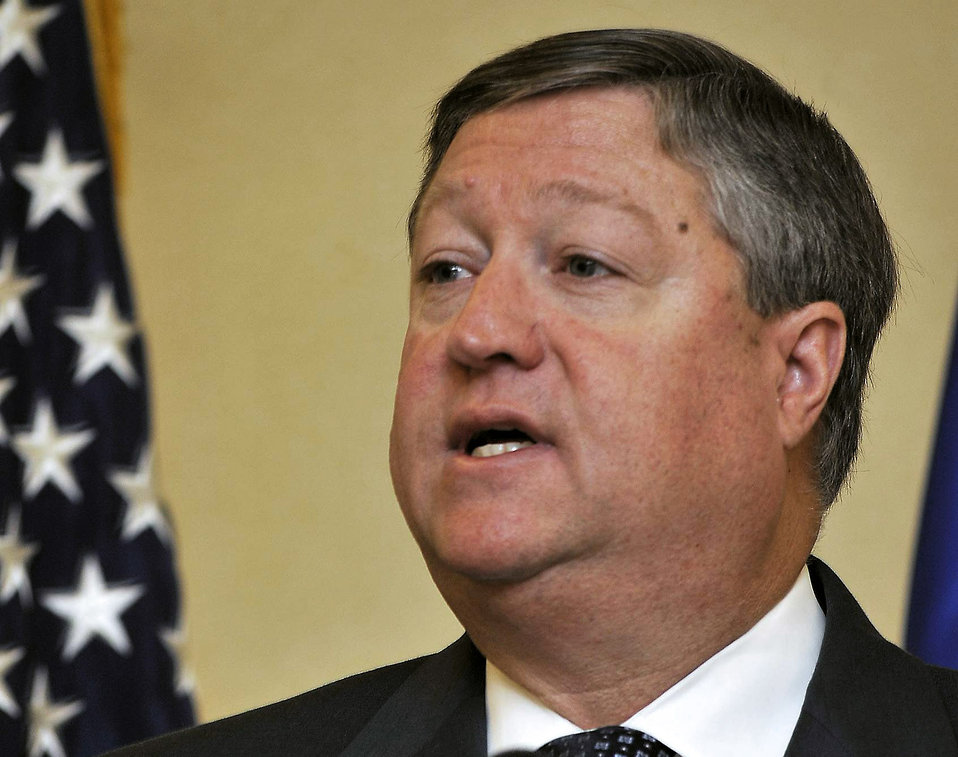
Air Force leaders reinforce zero tolerance for sexual assault

Secretary of the Air Force Michael B. Donley speaks at the Sexual Assault Prevention and Response Leader Summit held Nov. 17 and 18 in Alexandria, Va. The secretary and Air Force Chief of Staff Gen. Norton Schwartz challenged attendees-including Air Force leaders from major commands and wings throughout the Air Force-to make a commitment to eliminating sexual assault in the Air Force.